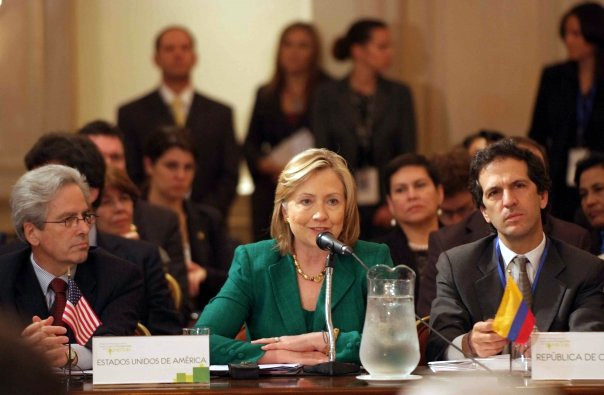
Secretary Clinton Speaks at Pathways to Prosperity

U.S. Secretary of State Hillary Rodham Clinton addresses the Pathways to Prosperity Conference in San José, Costa Rica, March 4, 2010.